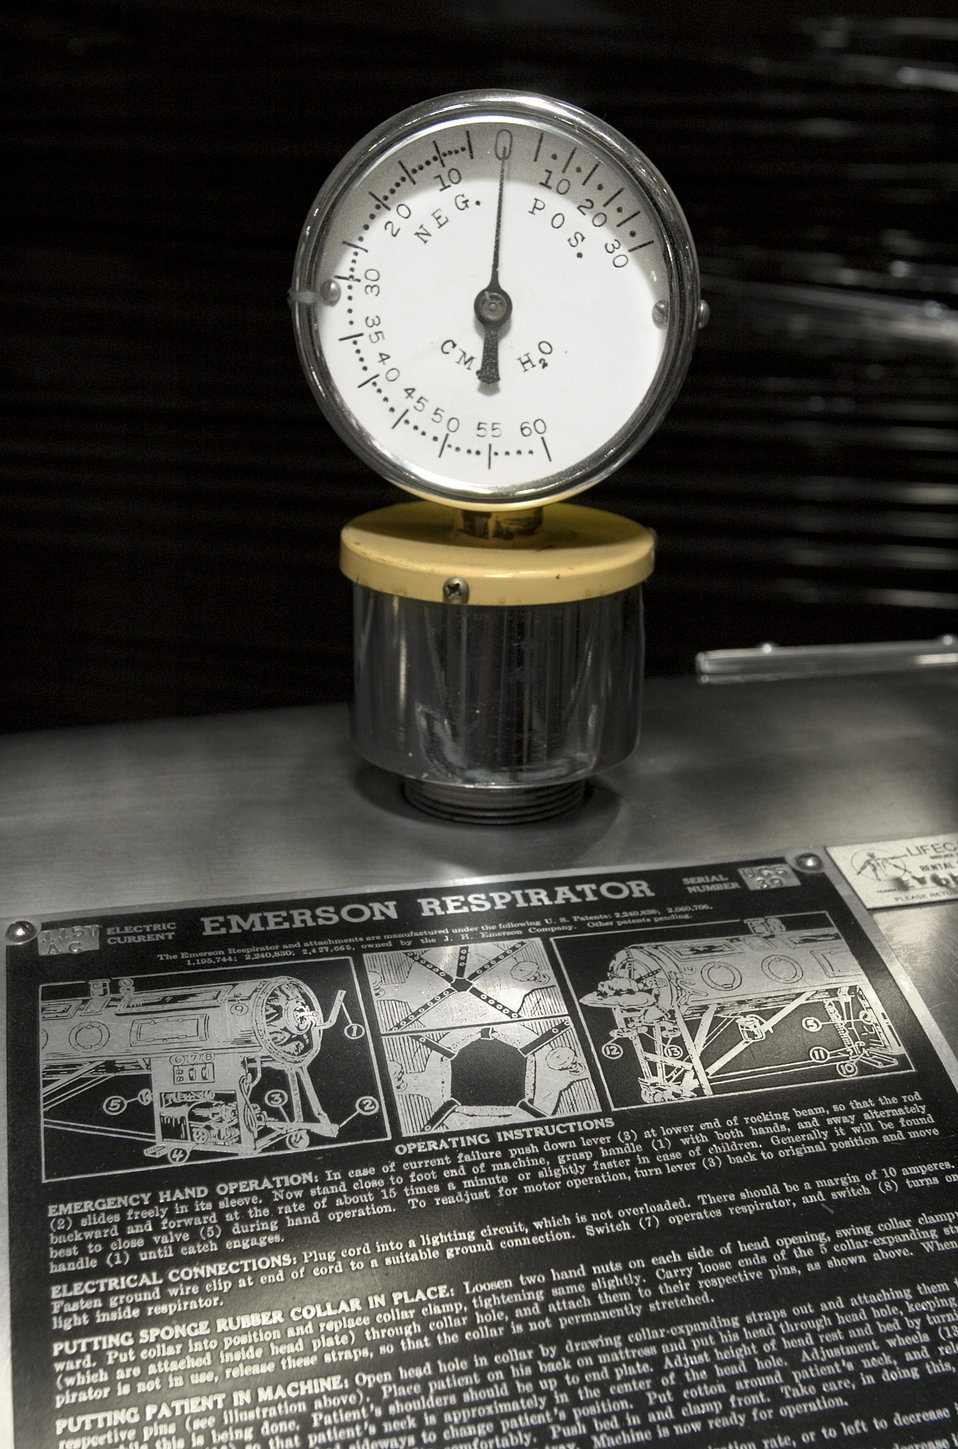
This photograph depicts the pressure gauge that sits atop of an Emerson model mechanical ventilation system, or iron lung.